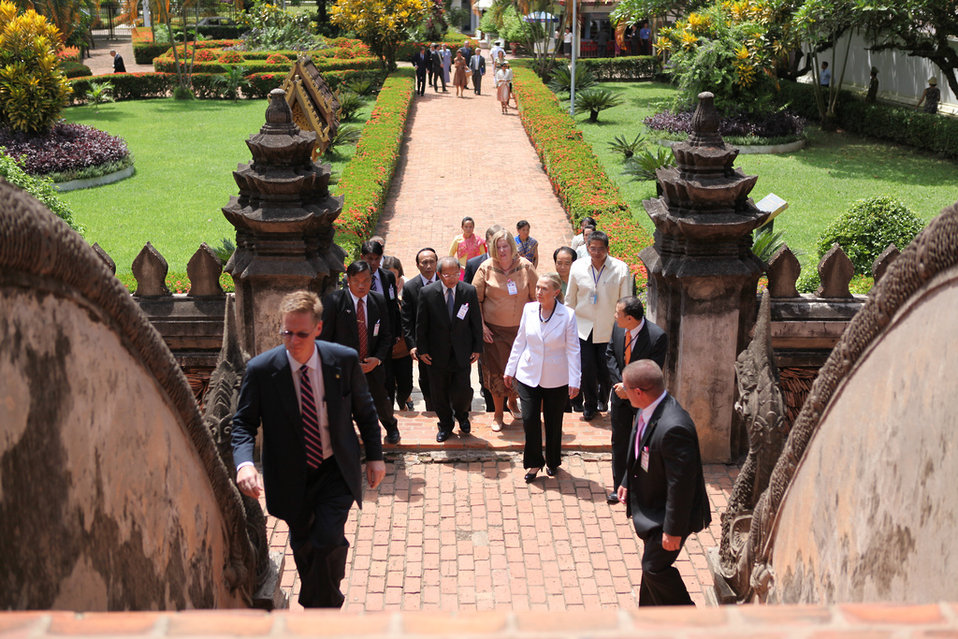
Secretary Clinton Tours the Ho Phra Keo Temple

U.S. Secretary of State Hillary Clinton begins a tour of the Ho Phra Keo Temple in Vientiane, Laos, on July 11, 2012.